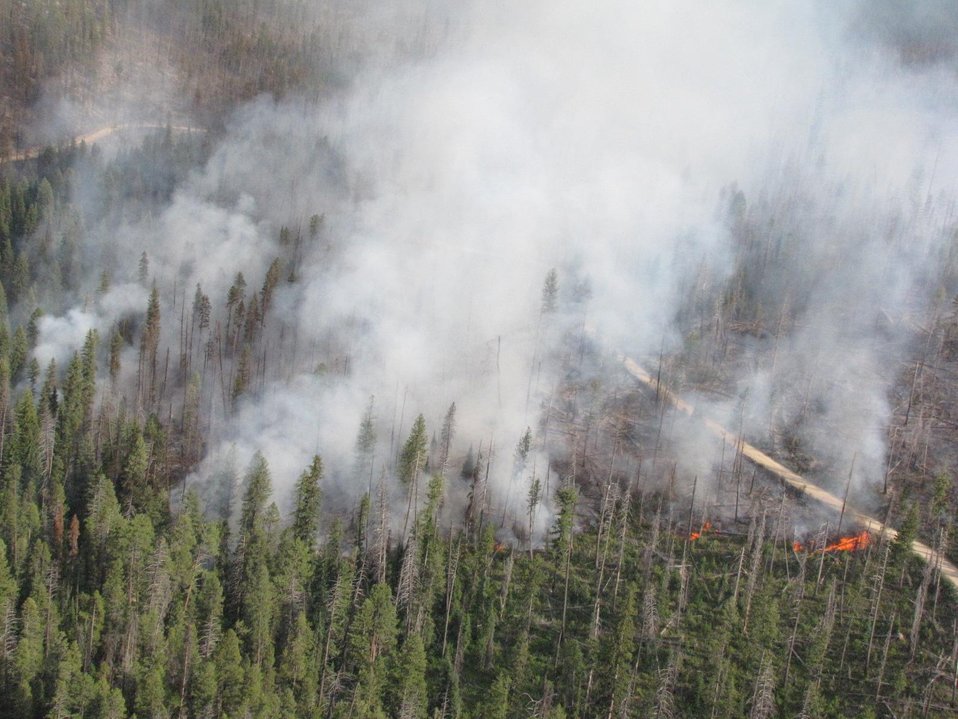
The Gold Pan Fire in the Bitterroot National Forest near Conner, MT began by lightning on Jul. 16, 2013 by lighting have consumed approximately 16,330 acres.